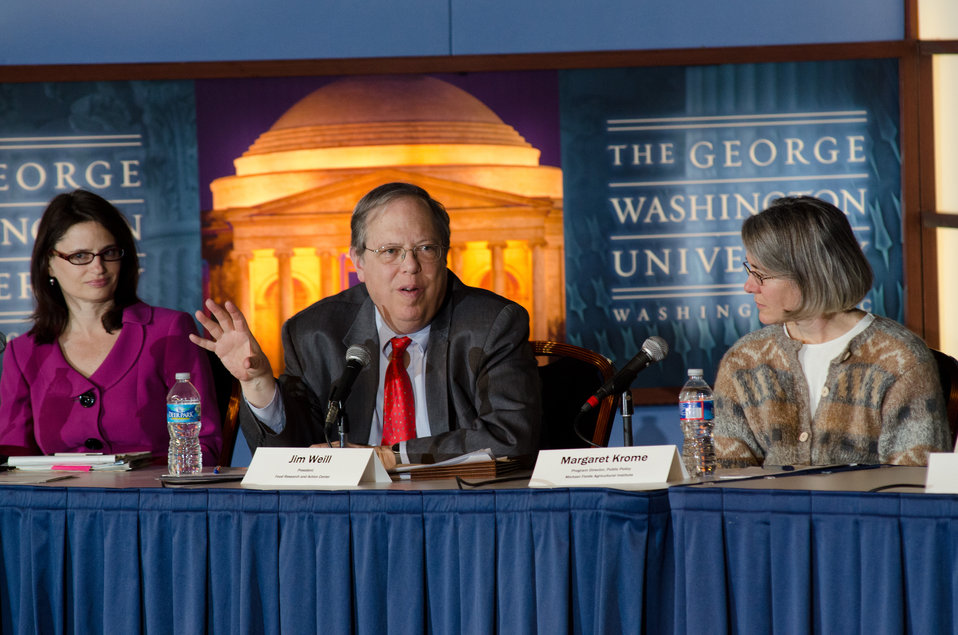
Food Research and Action Center President Jim Weill (center) responds to a question about subsidies and it’s relationship with international trade during the “Shaping the Farm Bill for a Sustainable Future” Forum in the Jack Morton Auditorium, at the Trachtenberg School of Public Policy and Public Administration, on the George Washington University campus in Washington, D.C., on Thursday, March 1, 2012.